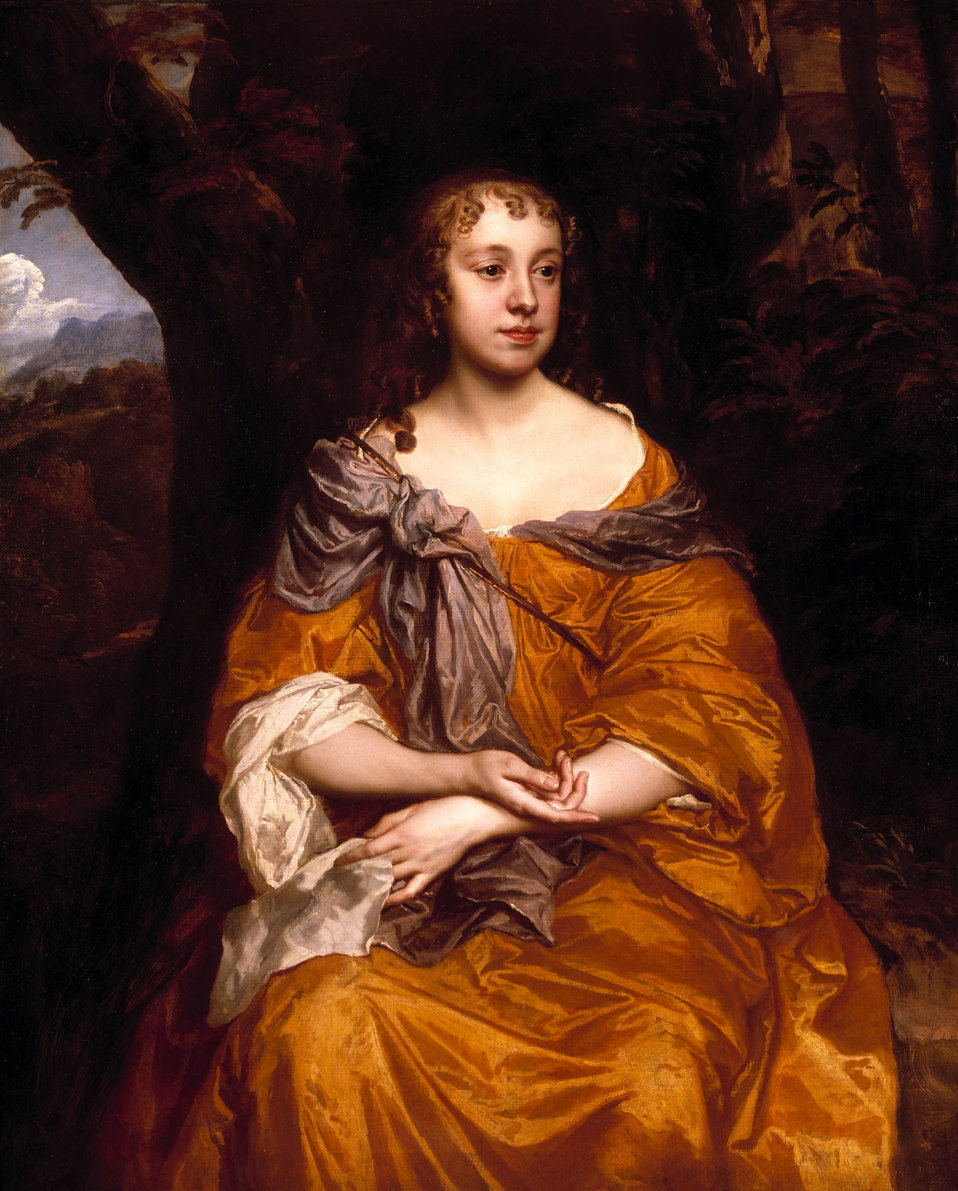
Miss Wharton) by Sir Peter Lely